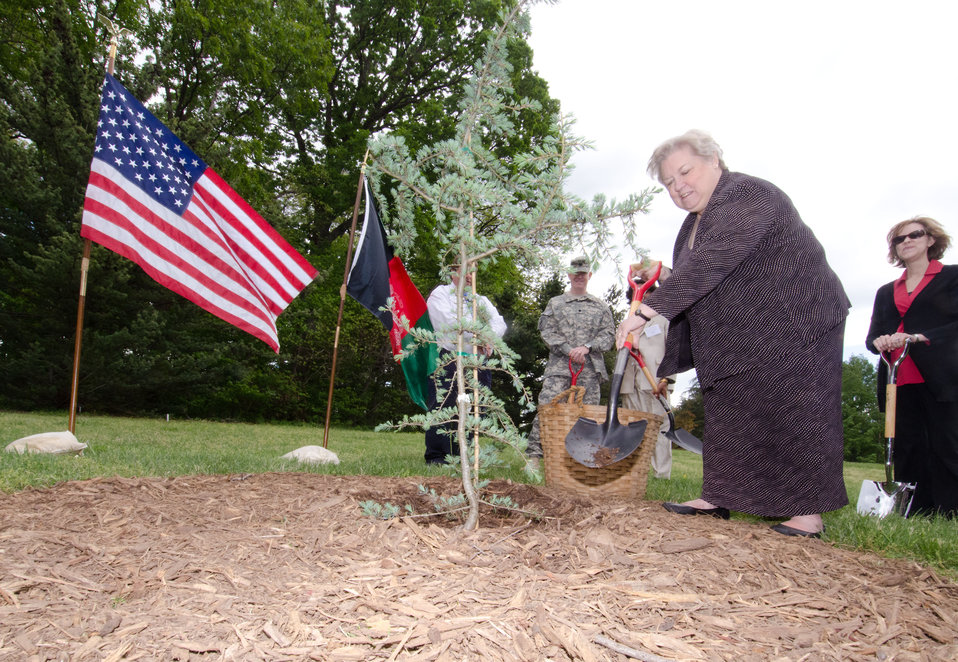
Director of U.S. National Arboretum Dr. Colien Hefferan add the final shovel of mulch during the Arbor Day tree planting of a Cedrus deodara ('Karl Fuchs') at the U.S. National Arboretum, on Friday, April 29, 2011 in Washington, DC.